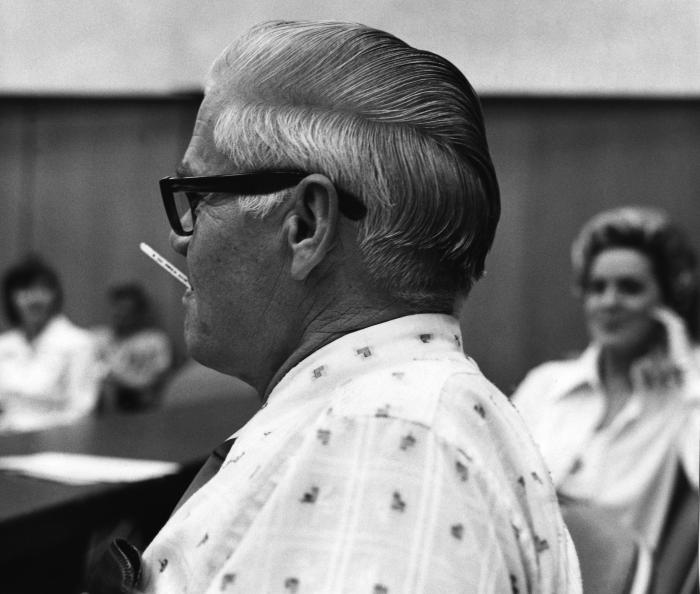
This May 12, 1976 photograph showed Dr. William C. Watson Jr., then deputy directory of the Centers for Disease Control, taking his temperature with an oral thermometer, while participating in an influenza (Swine Flu) vaccine test.